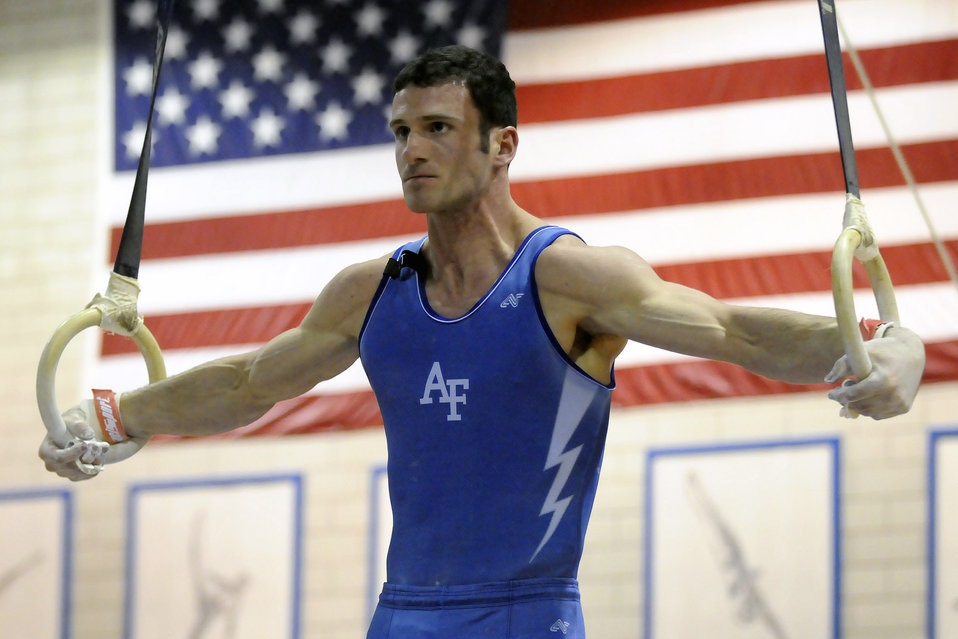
Stamina and form

Air Force Academy Junior Garrett Canter executes an iron cross on the still rings Jan 10 during the annual Rocky Mountain Open at the U.S. Air Force Academy in Colorado.